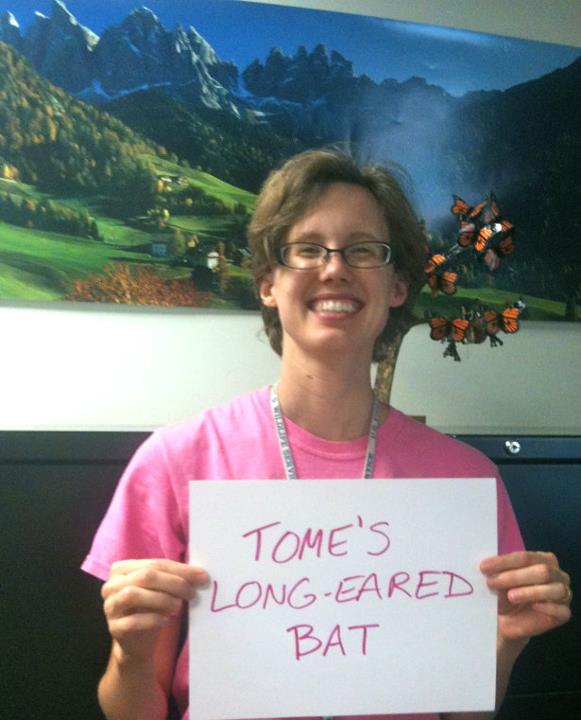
Rachel Penrod, 'Tome's Long-Eared Bat,'

International Affairs participates in FFI's In Our Hands campaign